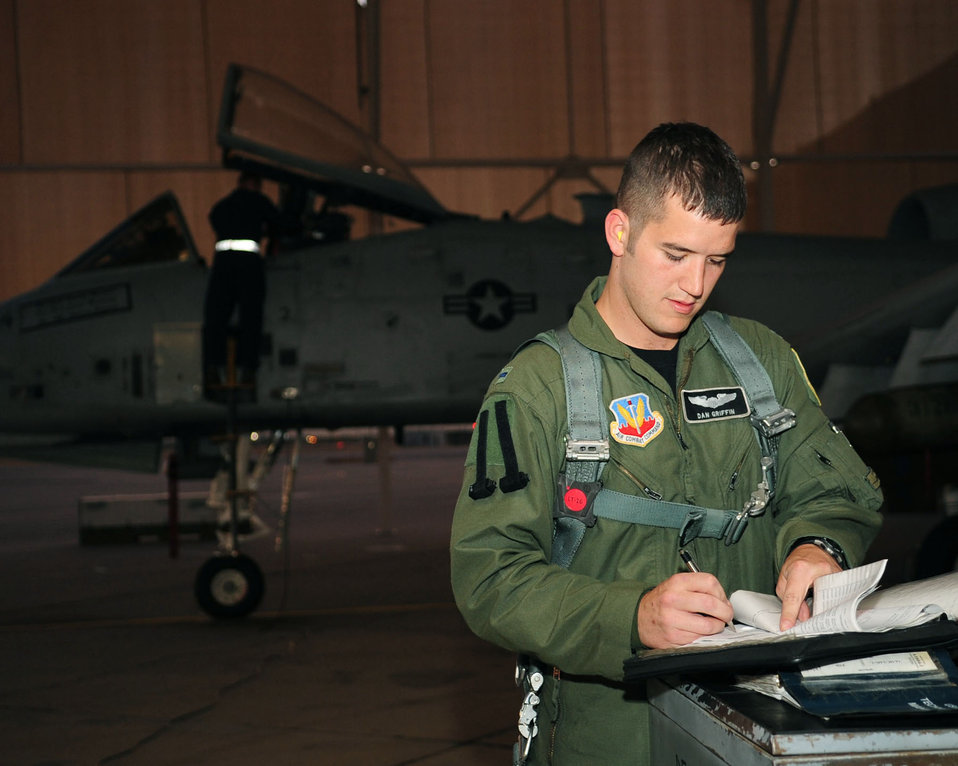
A-10 qualification

Prior to a training flight June 23, 2010, 1st Lt. Dan Griffin, a pilot from the 358th Fighter Squadron at Davis-Monthan Air Force Base, Ariz., reviews maintenance records for the A-10C Thunderbolt II he'll be flying. This was the lieutenant's second of eight night flying missions as part of the A-10C Pilot Initial Qualification course curriculum. Upon completion of this course he will be a fully qualified A-10C pilot.